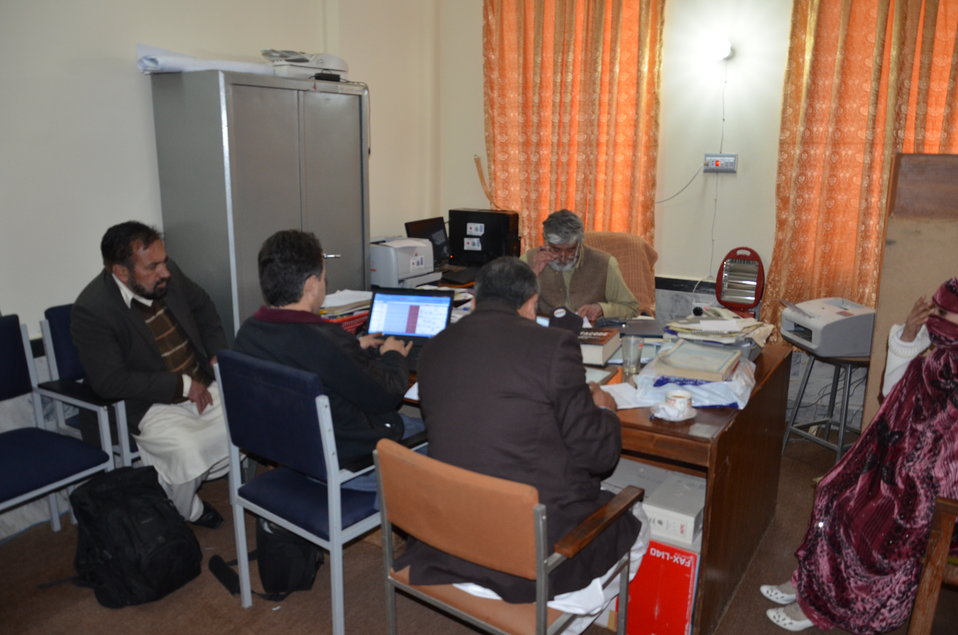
Interviews of female candidates for 18-month CMW training (Buner) (2)

With the support from USAID, Save the Children is training additional 200 CMWs from seven districts of Malakand Division and four agencies of FATA (Bajaur, Mohmand, SWA and Orakzai) through USAID’s FATA-KP Health Program. The program will also provide support in establishing birthing stations for the trained CMWs. USAID’s FATA-Khyber Pakhtunkhwa Health Program is a 5-year USAID funded program, implemented by Save the Children in seven districts of Malakand Division and four agencies of FATA (Bajaur, Mohmand, SWA and Orakzai) The strategic objective of the program is to improve health status of children and mothers in FATA and KP.
Interviews of candidates from Buner for 18-month CMW training . In collaboration with MNCH program KP and FATA a panel of 4 members was constituted, i.e. Representative of MNCH Program FATA/KP, District Health Officer of concerned District, Field Program Manager of USAID’s FATA-KP Health Program and District/Agency Coordinator of the concerned district/Agency.